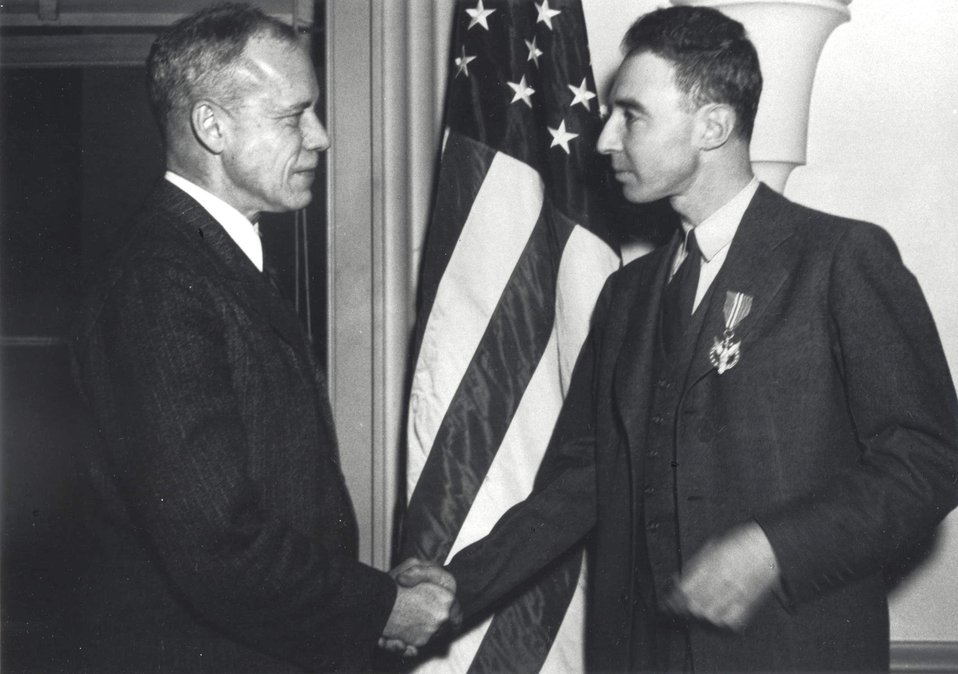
R. OPPENHEIMER AWARDED MEDAL OF MERIT BY SECRETARY WAR ROBE